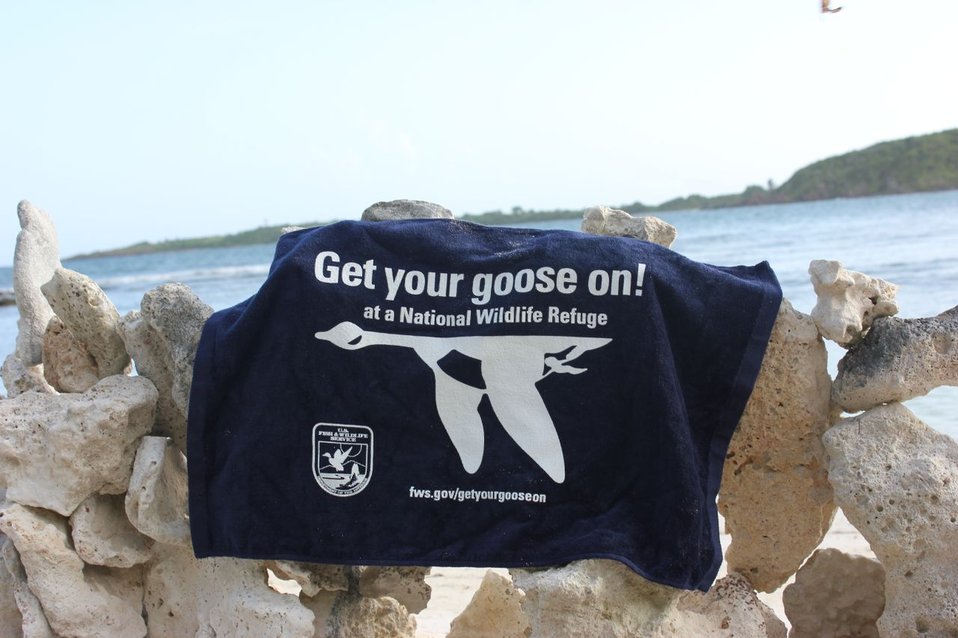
Coral Wall

Visitors to the gorgeous beaches found on Puerto Rico's Vieques National Wildlife Refuge, have adopted the habit of stacking the plentiful coral and conch shells found on the beaches. This was a particularly large example.